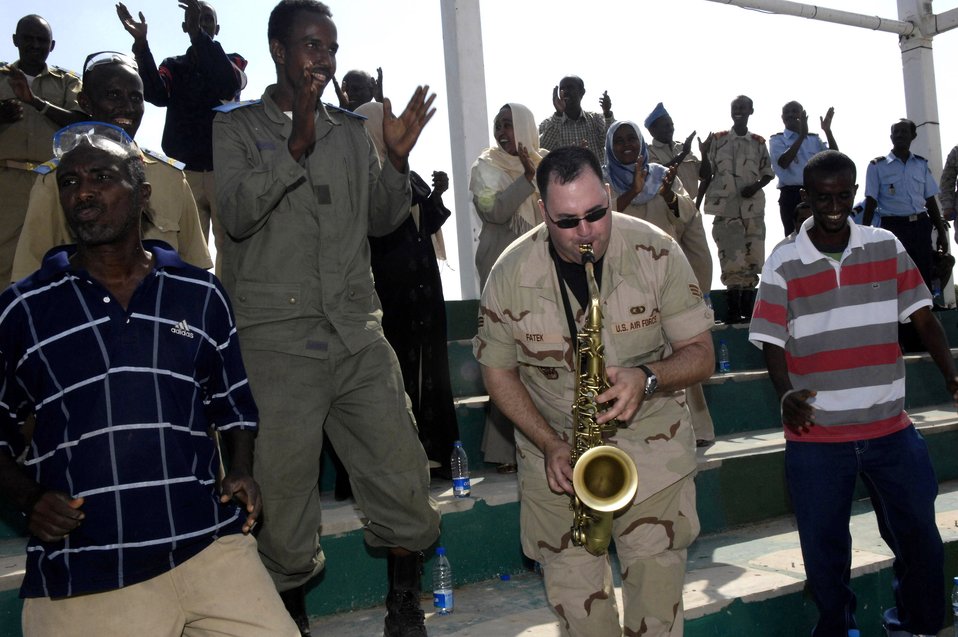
Air Force band kicks off tour in Djibouti

Senior Airman David Fatek performs for the Djibuti national police academy Jan. 22. The U.S. Central Command Air Forces Band Live Round will be performing eight shows in five days in Africa for the base and the local community. Airman Fatek is a U.S. Central Command Air Forces Band member.